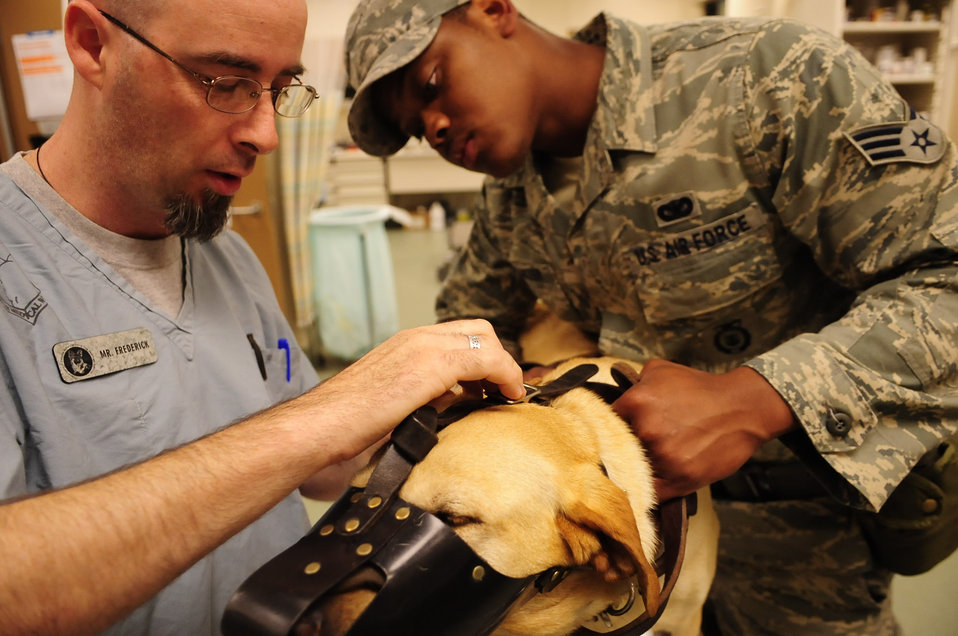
Officials outline adoption process for military working dogs

Mr. Rufus Fredrick and Senior Airman Tommy Carter conduct a weekly checkup on a military working dog at Lackland Air Force Base, Texas, recently. To reassure all military working dogs are in proper health, each dog is given a weekly checkup.